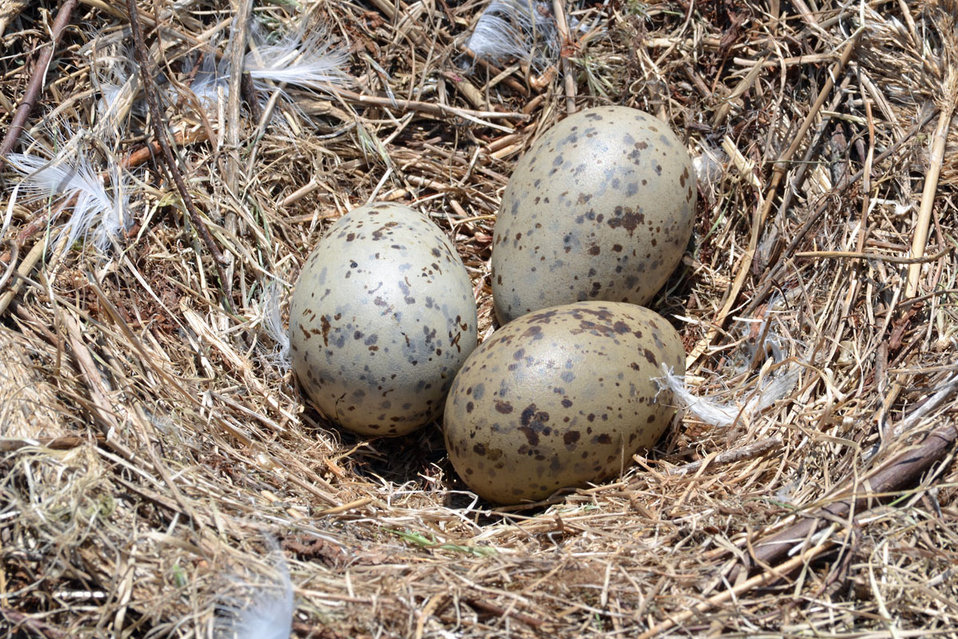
Gull eggs

Thacher Island National Wildlife Refuge, MA.